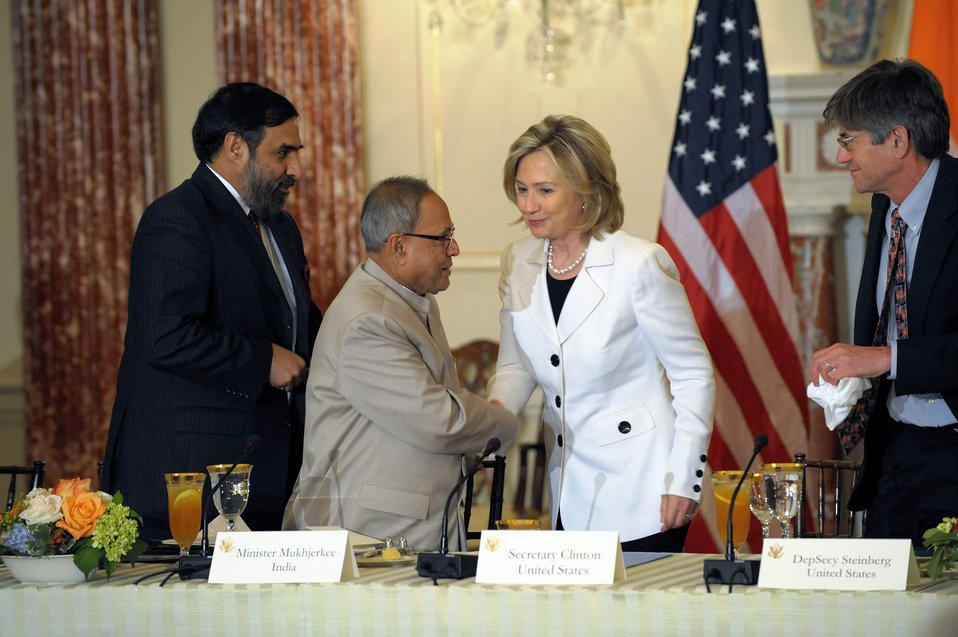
Secretary Clinton Shakes Hands With Indian Finance Minsiter Mukherjee

U.S. Secretary of State Hillary Rodham Clinton shakes hands with Indian Finance Minister Pranab Mukherjee at the U.S.-India CEO Forum at the U.S. Department of State on June 22, 2010.